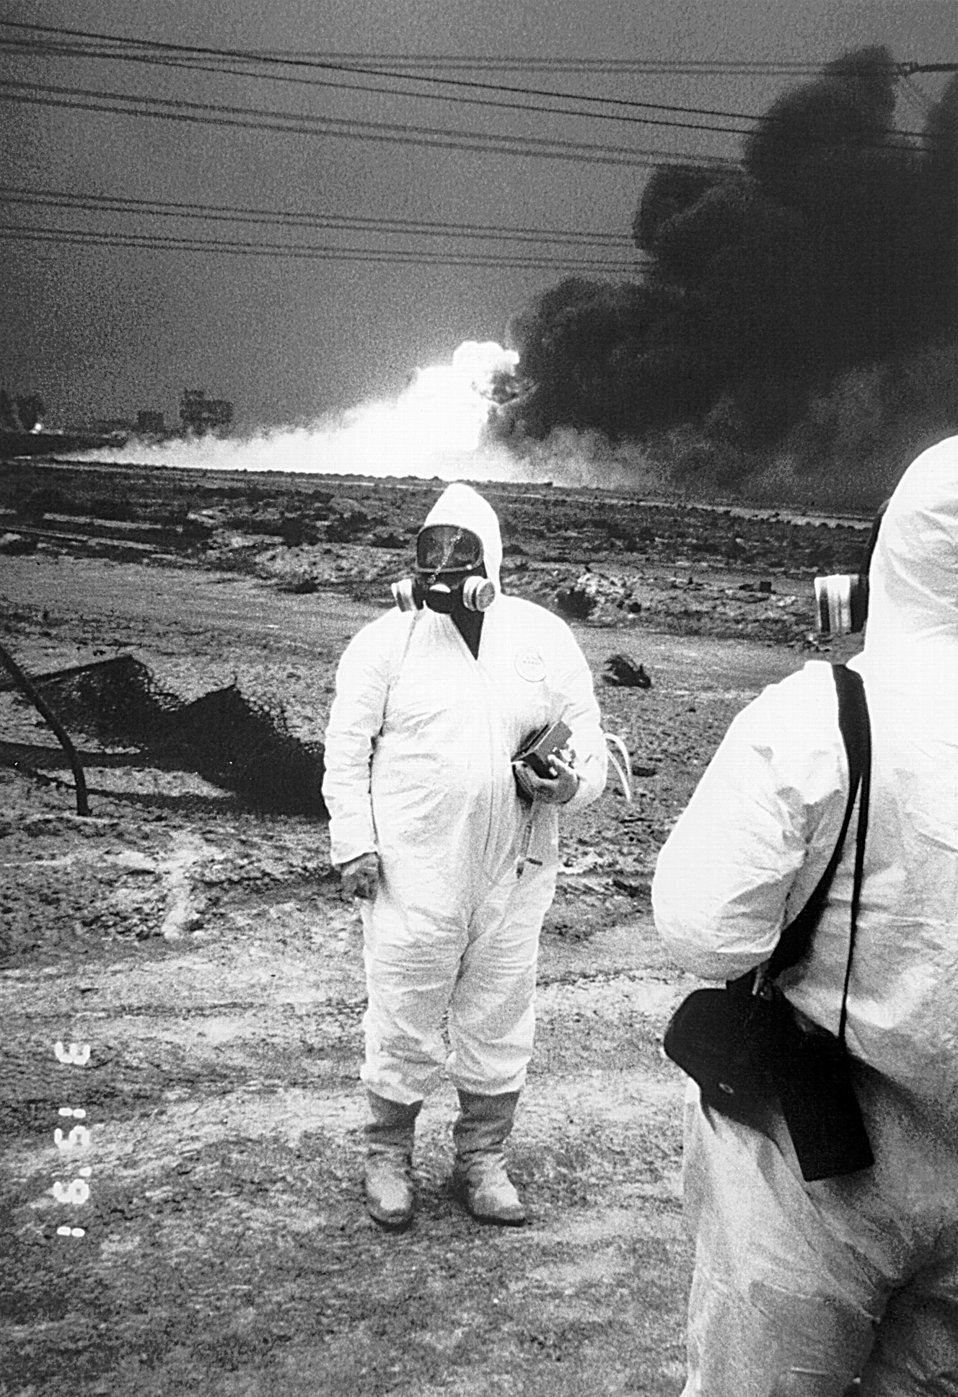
This was a hazmat technician analyzing the contents of a potentially environmentally toxic site wearing a protective suit.